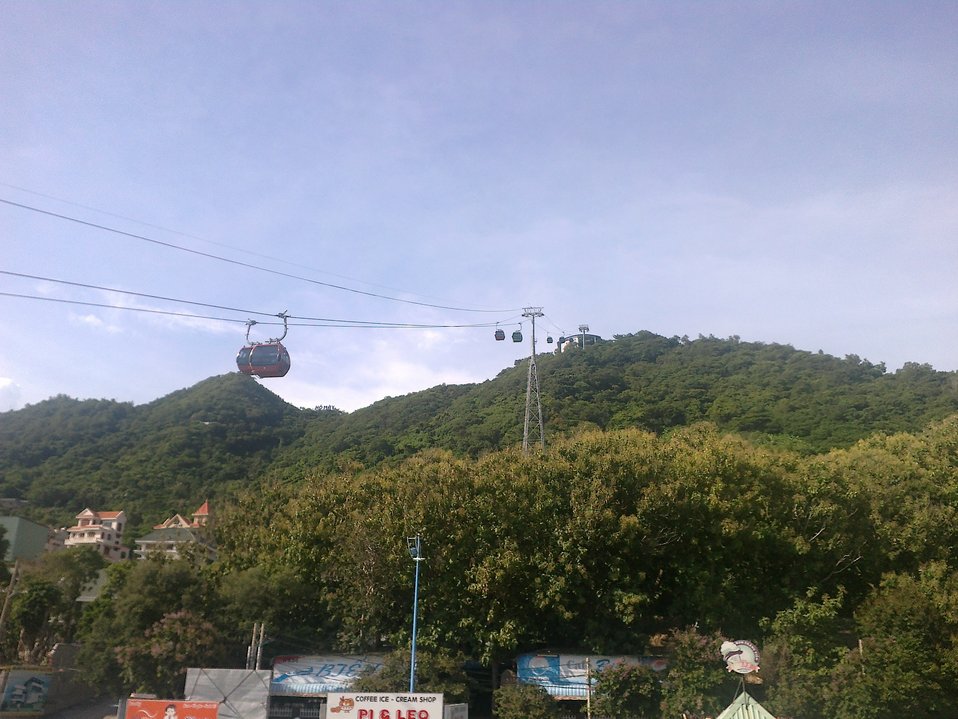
Tiếng Việt: Cáp treo lên Khu du lịch sinh thái Hồ Mây ở Vũng Tàu